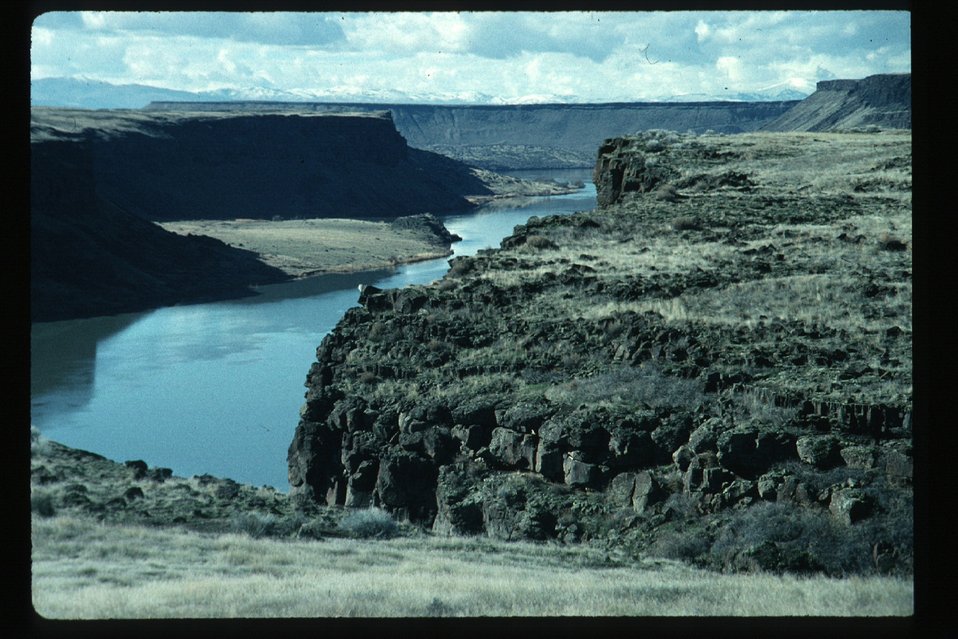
Snake River narrows CJ Strike Reservoir Snake River Canyon Owyhee Field Office LSRD Lower Snake River District